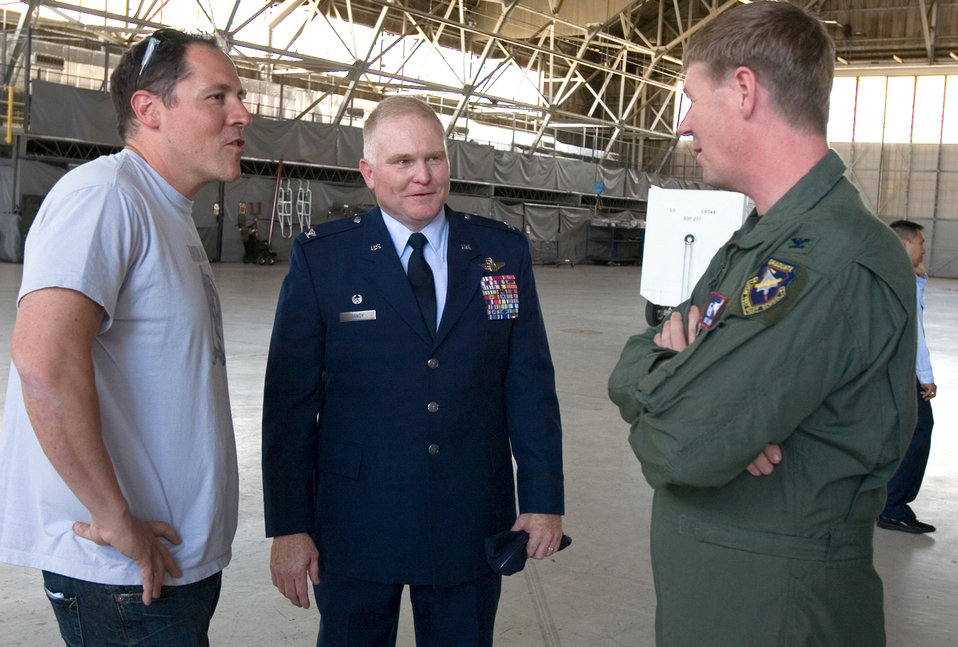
'Ironman' visits Edwards